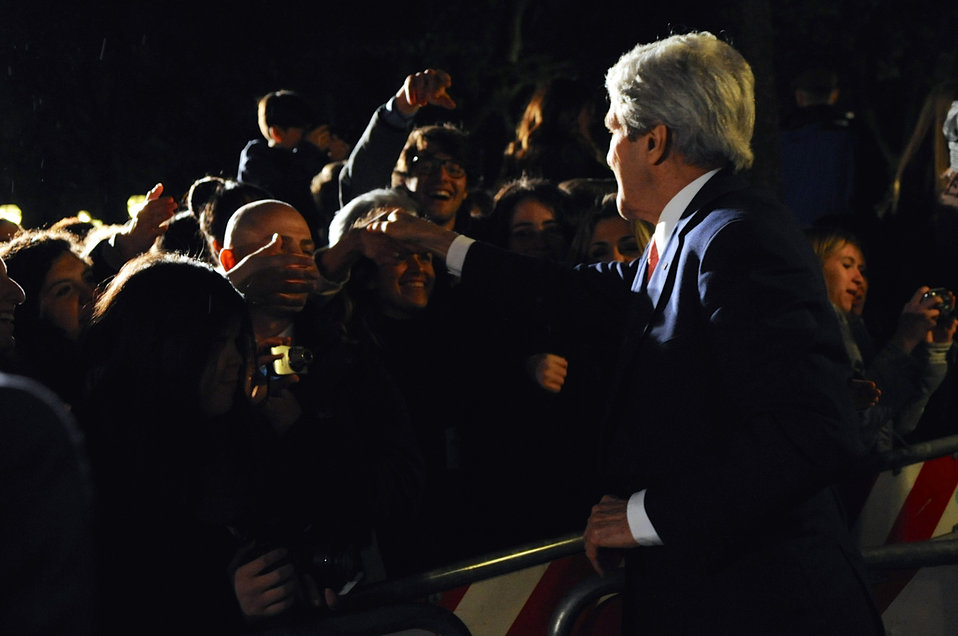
Secretary Kerry Greets Tri-Mission Rome Staff After President Obama's Speech

U.S. Secretary of State John Kerry shakes hands with employees and family members after he and President Obama addressed the Tri-Mission Rome staff to Italy, the Holy See, and UN agencies in Rome on March 27, 2014.